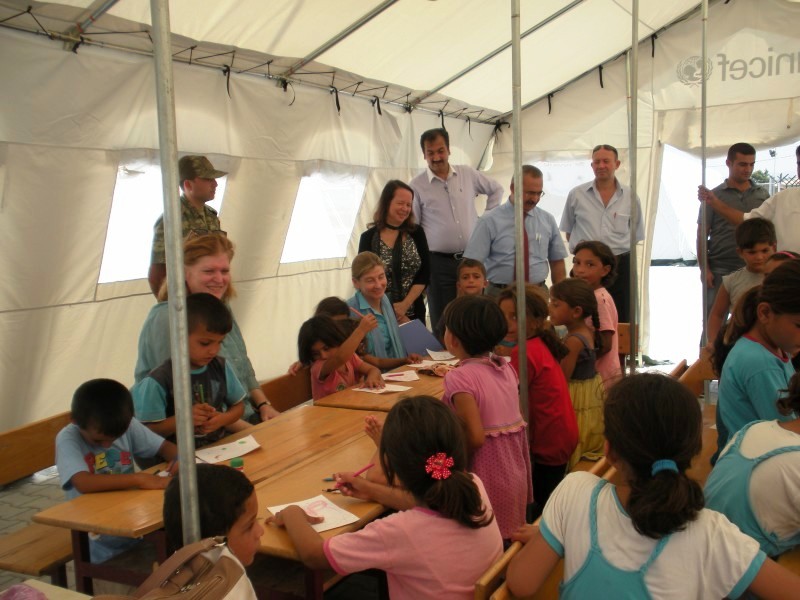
Assistant Secretary Richard and USAID Assistant Administrator Lindborg Meet With Syrian Refugees

Assistant Secretary for the Bureau of Population, Refugees, and Migration Anne C. Richard and USAID Assistant Administrator for Democracy, Conflict, and Humanitarian Assistance Nancy Lindborg meet with Syrian refugees at a camp in Hatay Province, Turkey, September 2012.